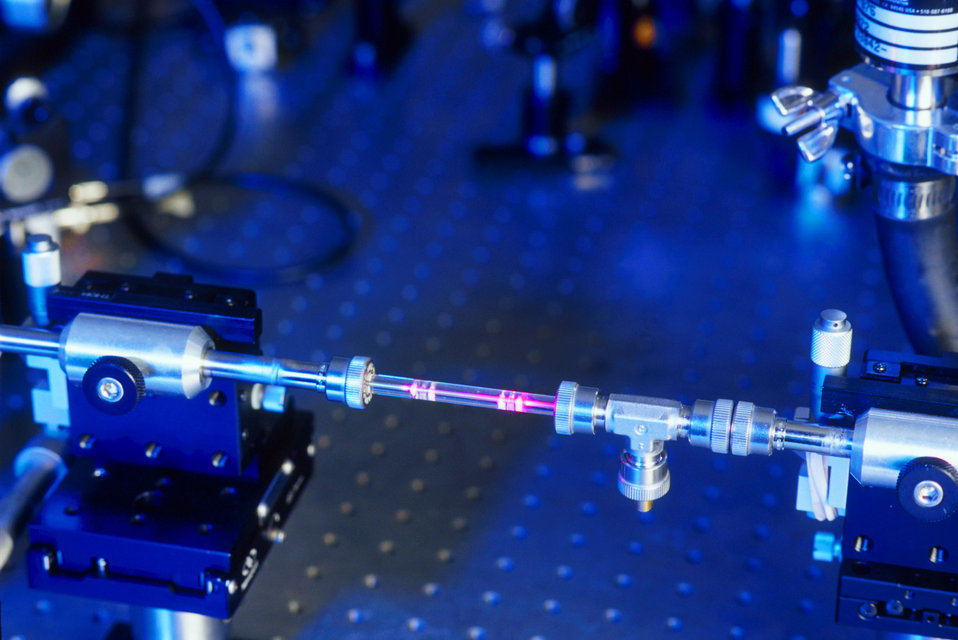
Lasers may aid missile defense, engine crack detection

Extreme nonlinear optical techniques have succeeded in upconverting visible laser light into X-rays, making a tabletop source of coherent soft X-rays possible. The interaction of atoms and molecules is both useful for making coherent X-rays which, in the future, may show previously undetectable cracks in jet turbine blades.